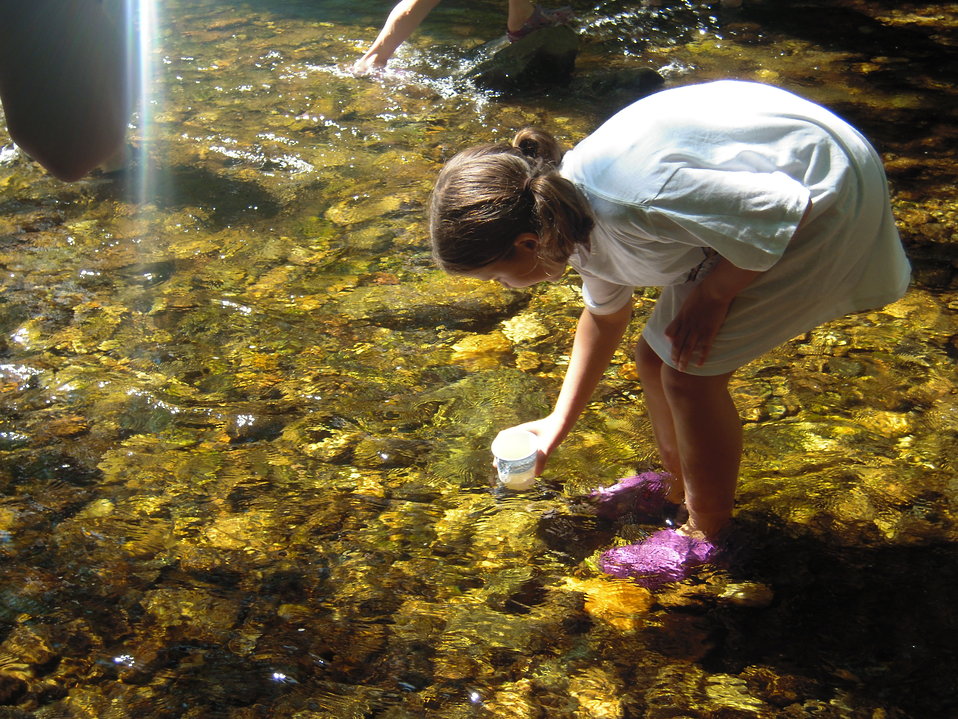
Goodbye salmon